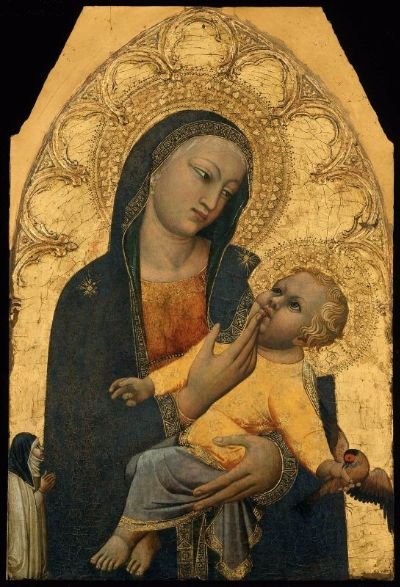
'Virgin and Child', tempera on panel painting by Antonio Veneziano, c. 1380, Museum of Fine Arts, Boston